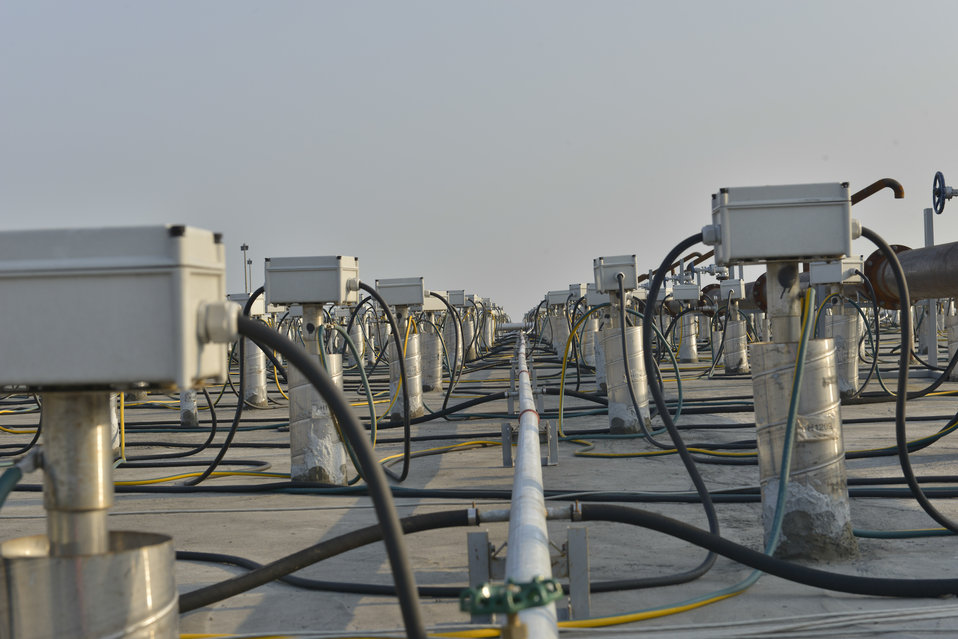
The containment and treatment structure at the Danang Airport Project site.

Heating elements have been installed into the heater wells that are drilled throughout the containment structure, and power cables have been installed to connect the treatment system to the electrical substations adjacent to the containment structure.

March 24, 2014.